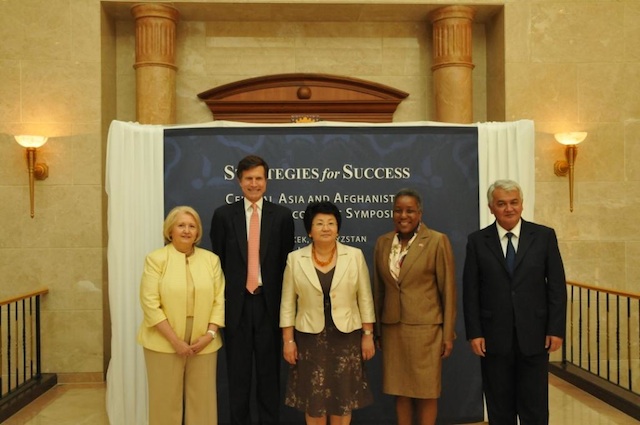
Ambassador Verveer, Assistant Secretary Blake, Kyrgyz Republic President Otunbayeva, Ambassador Spratlen, and First Deputy Chief of Staff Mamkulov Convene at the President’s Residence

U.S. Ambassador-at-Large for Global Women’s Issues Melanne Verveer, left; U.S. Assistant Secretary of State for South and Central Asian Affiars Robert Blake, second from left; Kyrgyz Republic President Roza Otunbayeva, center; U.S. Ambassador to the Kyrgyz Republic Pamela Spratlen; second from right; and the First Deputy Chief of Staff to the President of the Kyrgyz Republic, Erkin Mamkulov, right; convene at the President’s residence before the opening of the Central Asia and Afghanistan Women’s Economic Symposium in Bishkek, Kyrgyzstan, on July 18, 2011.